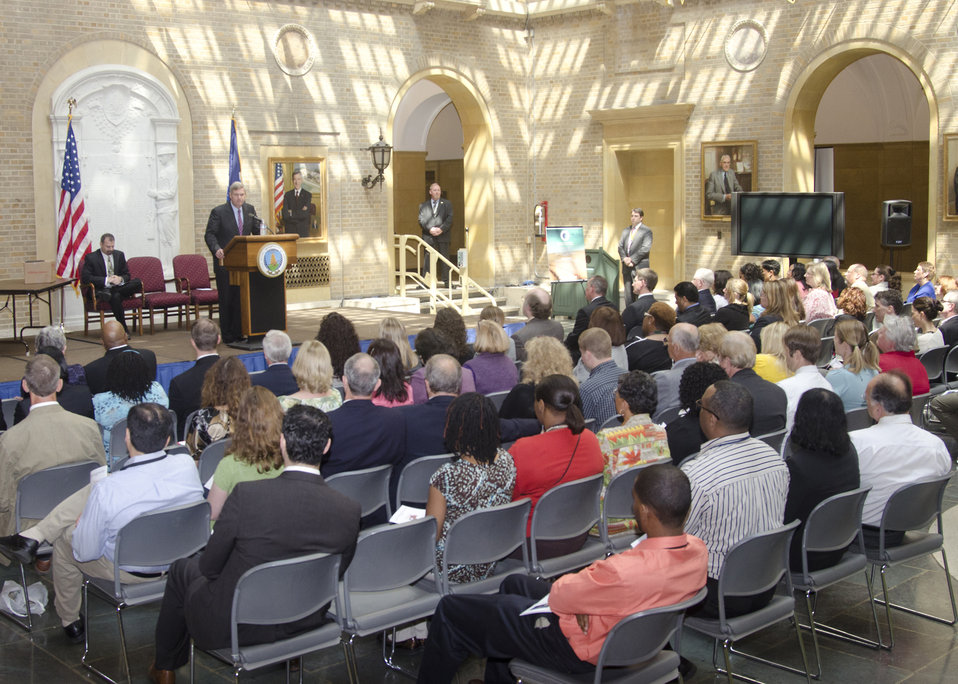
The U. S. Department of Agriculture (USDA) Unsung Heroes awards are presented to employees who have consistently provided exceptional service to the American public. Through their accomplishments, these “Unsung Heroes” demonstrate their dedication to public service and their commitment to fulfilling the mission of USDA. Agriculture Secretary Tom Vilsack speaks at the Unsung Heroes Award ceremony on Tuesday, May 3, 2011on the Whitten Building patio at the Department of Agriculture in Washington DC.